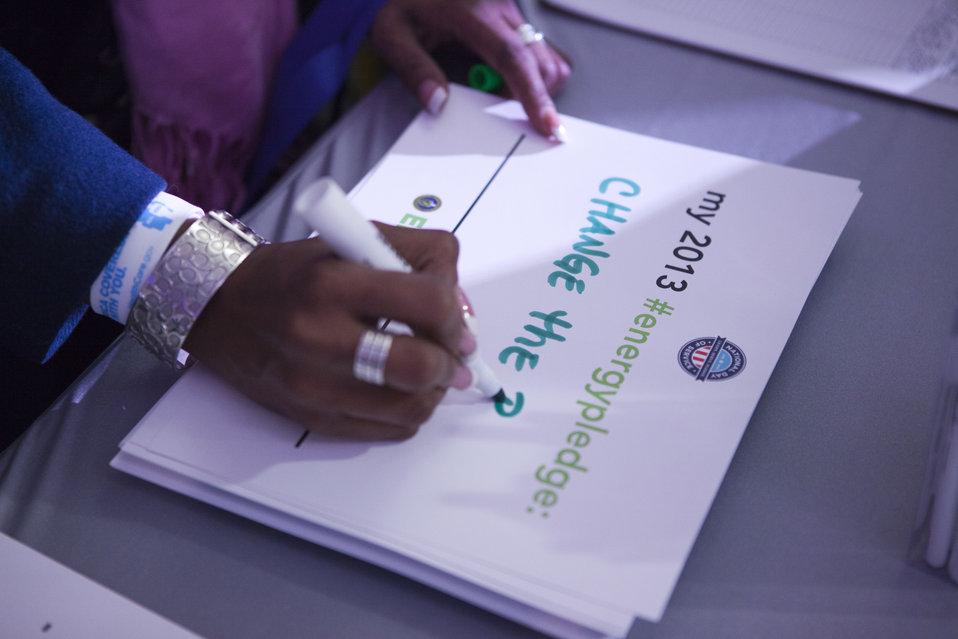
What's your #energypledge?